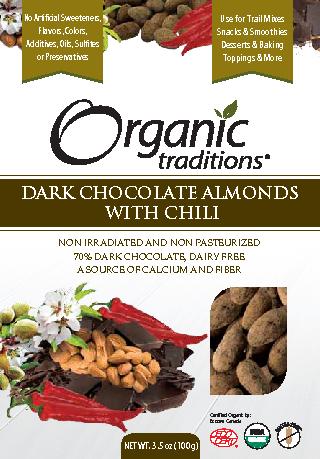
ChocAlmondsChili 100g Front4.4375x6.375 US LR